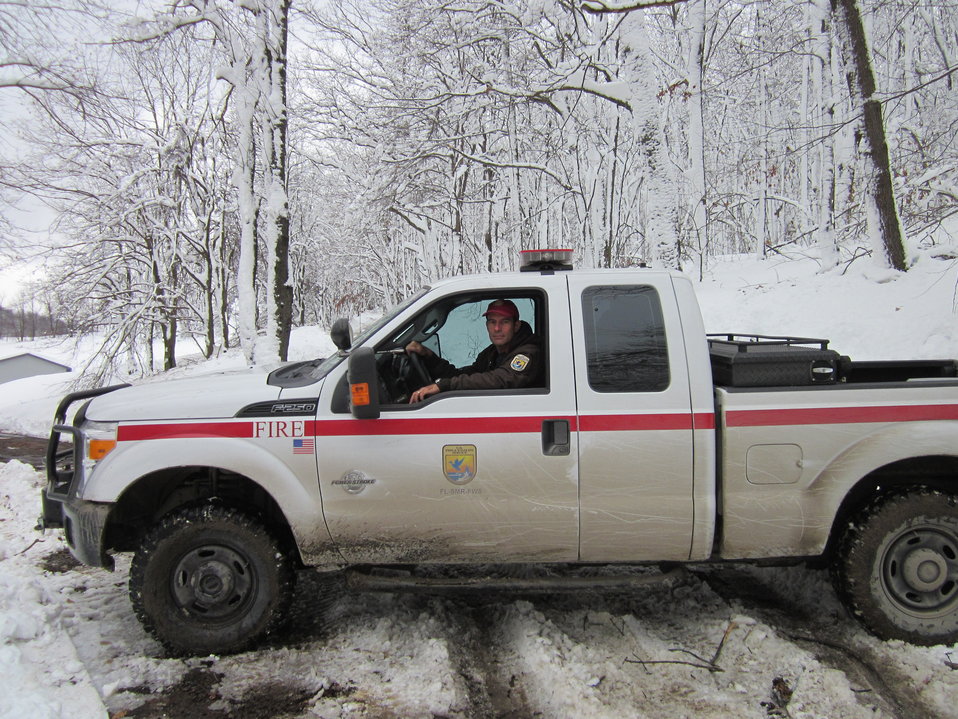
This isn't Florida!

Terra Alta, WV. November 4, 2012: Division Supervisor Greg Titus of the Southern Area Type 1 Red Incident Management Team checks a road in Preston County, where he supervised a 20-person saw crew. The Red Team supervised and supported three 20-person saw crews who worked with the National Guard to open over 200 miles f roads in Preston, Randolph, and Tucker Counties allowing access for residents and electric crews. Titus is a Division Forest Managment Officer based at St. Marks National Wildlife Refuge Credit: Catherine J. Hibbard/USFWS